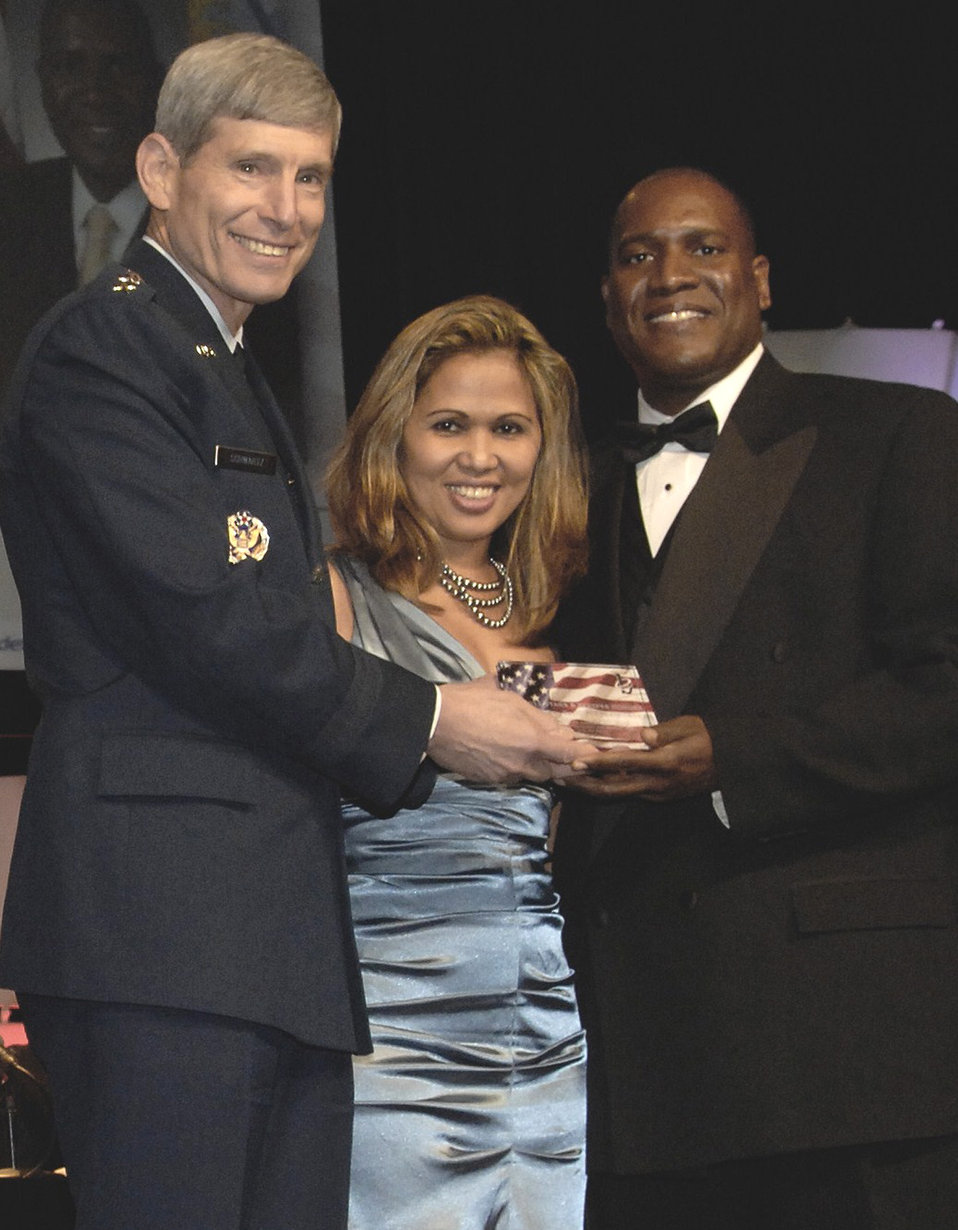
Dr. Taylor

Air Force Chief of Staff Gen. Norton Schwartz poses with Dr. Jarris L. Taylor Jr. and his wife, Maria Taylor, during the 2011 Black Engineer of the Year Award ceremony Feb. 18, 2011, in Baltimore, Md. Dr. Taylor is the deputy assistant secretary of strategic diversity integration.